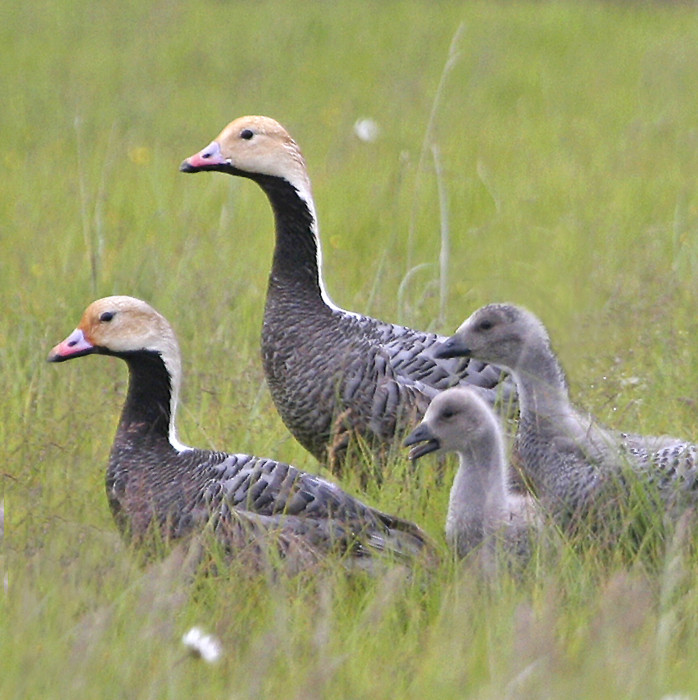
Emperor goose family

Yukon Delta National Wildlife Refuge